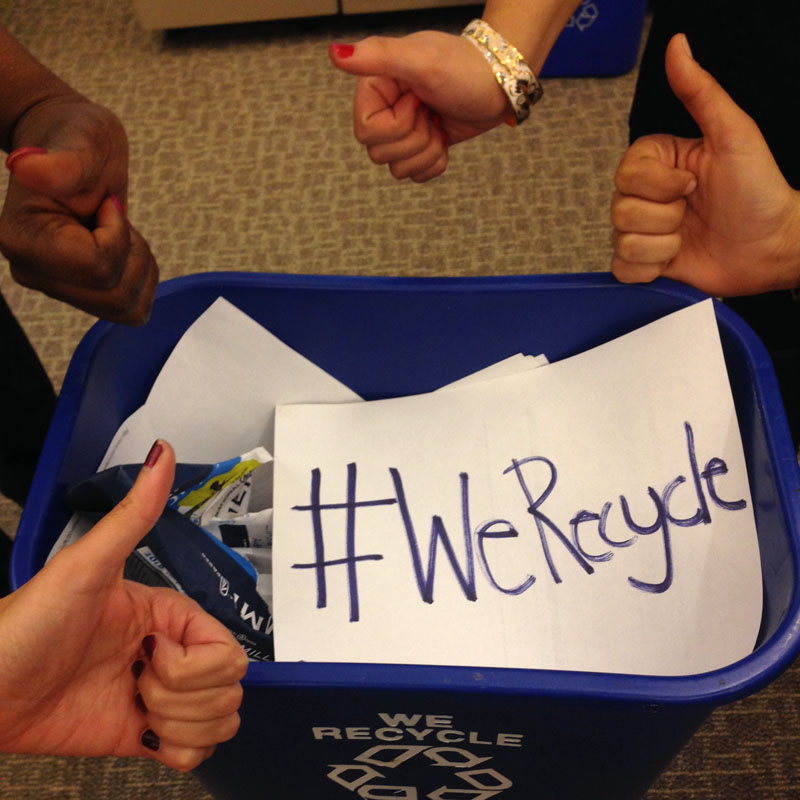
EPA Employees Recycle

At EPA, #WeRecycle. Learn how you can too: www2.epa.gov/recycle